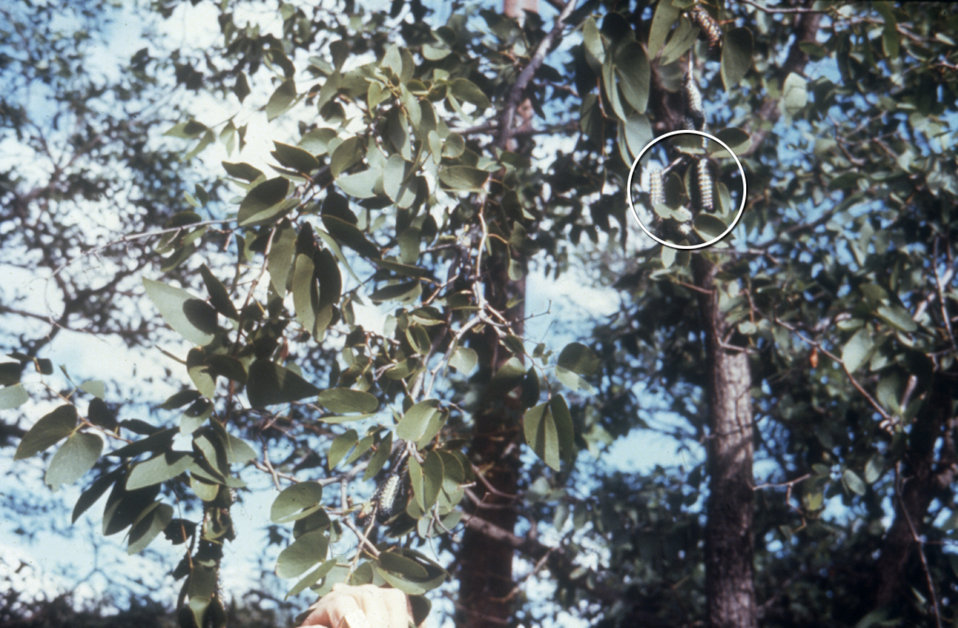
This photo shows Mopani worms on a Beitbridge, Zimbabwean campground site through which 2 traveling Marburg patients passed.